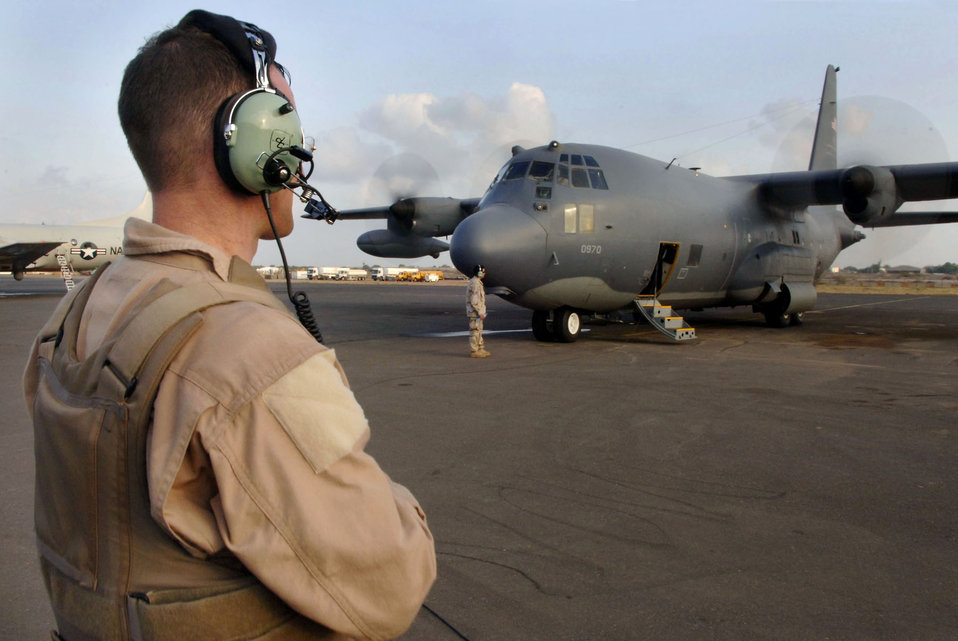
Djibouti air ops

Senior Airman Mark Victor prepares an HC-130P for take off March 28 at Camp Lemonier, Djibouti, Africa, during a recent mission. Since May of 2003, Camp Lemonier has been the staging area for the combined joint task force that has built numerous schools, clinics and hospitals. The task force has also accomplished dozens of medical and dental exercises and humanitarian assistance missions. Airman Victor is a loadmaster deployed from the 39th Rescue Squadron at Patrick Air Force Base, Fla.